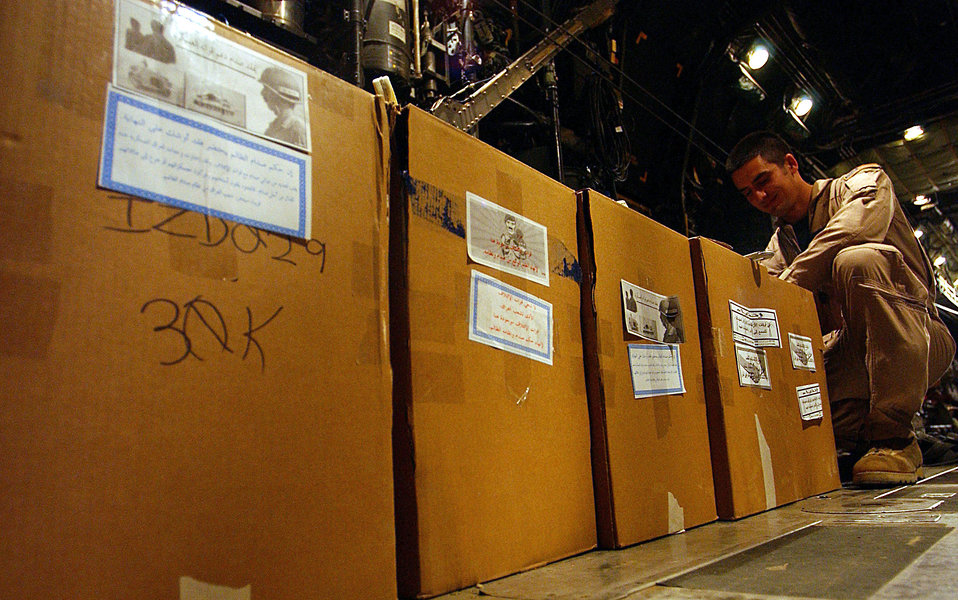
Special delivery

OPERATION IRAQI FREEDOM -- An MC-130E Combat Talon loadmaster ties down boxes containing leaflets to be dropped over Basra, Iraq. The leaflets send a message that coalition forces are here to help, ask that Iraqi civilians not get in the way of coalition forces and ask Iraqi soldiers to capitulate.